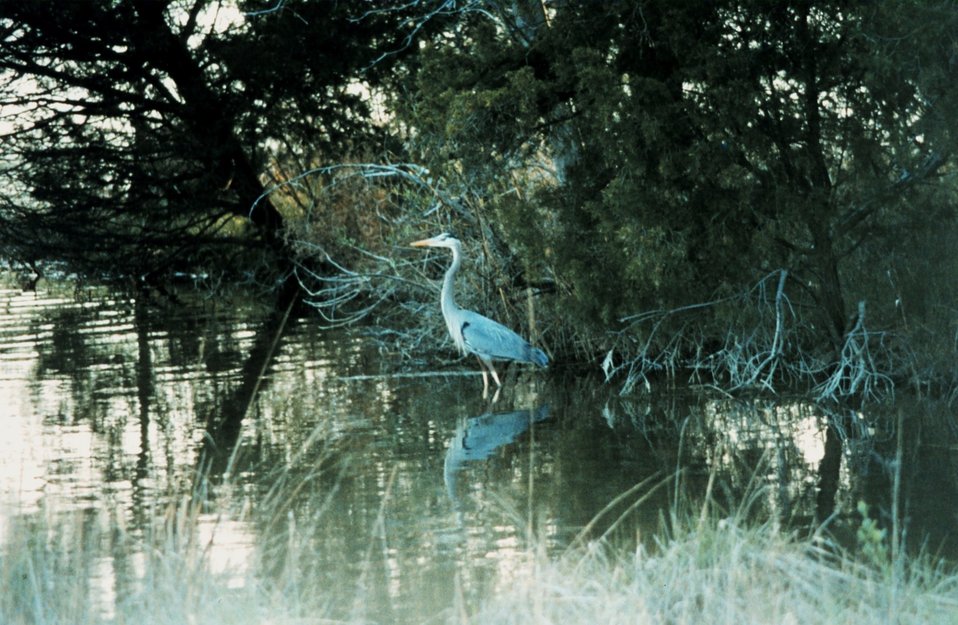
A great blue heron in a tidal pond